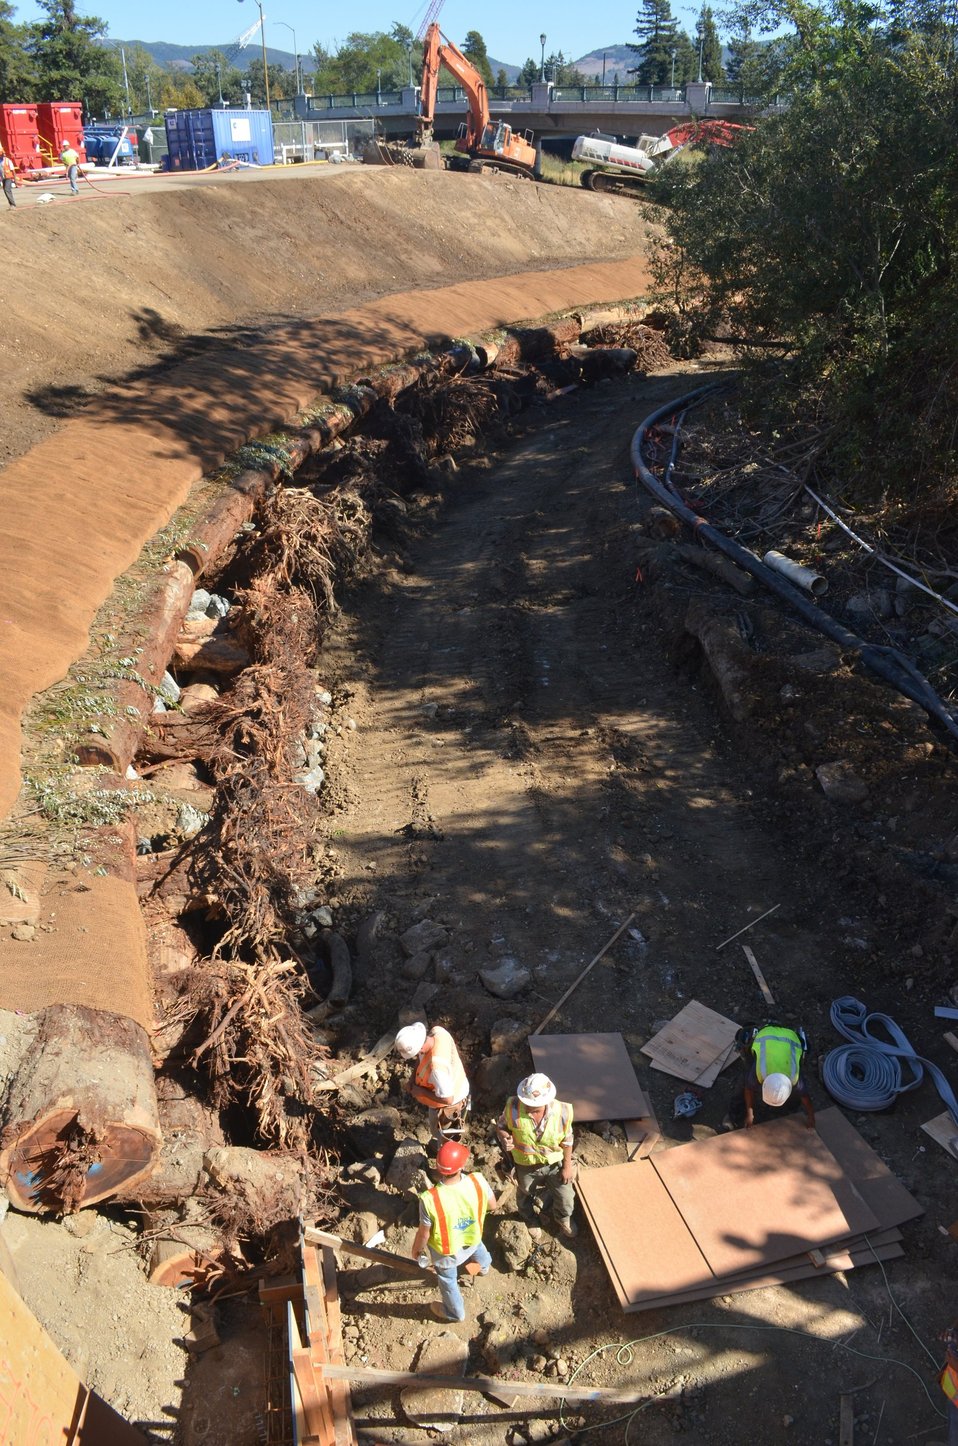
Napa flood risk reduction efforts

Construction crews work in Napa Creek alongside the large woody debris used to curb erosion. (US Army Corps of Engineers/DeDe Cordell)